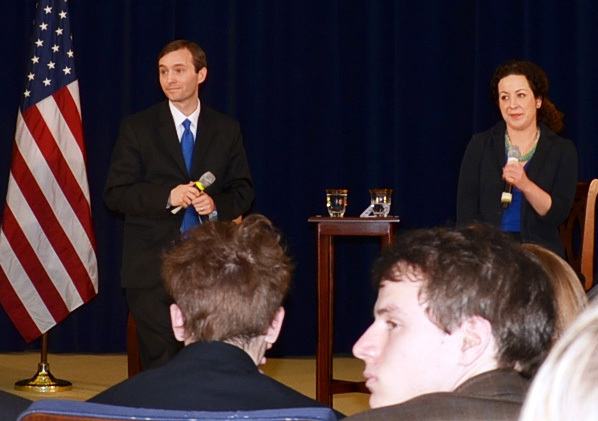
Senior Advisor Tillemann and Buzzfeed's Miriam Elder Respond to Question from Students

Senior Advisor for Civil Society and Emerging Democracies Tomicah Tillemann and BuzzFeed's Miriam Elder respond to questions from students at Secretary Kerry's Town Hall on 'Making Foreign Policy Less Foreign' at the U.S. Department of State in Washington, D.C., on March 18, 2014.